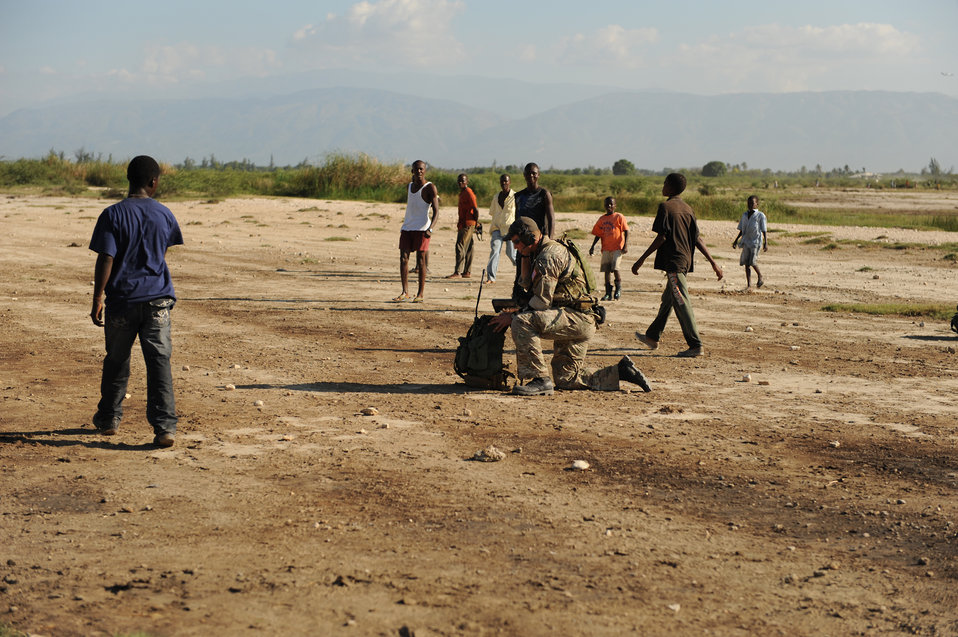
Haiti Earthquake Relief

An Air Force combat controller packs up equipment Jan 18, 2010 after an air delivery of humanitarian aid in Port-au-Prince, Haiti. Department of Defense assets have been deployed to assist in the Haiti relief effort following a magnitude 7 earthquake that hit the city on Jan. 12, 2010. The combat controller is assigned to the 23rd Special Tactics Squadron at Hurlburt Field Fla.